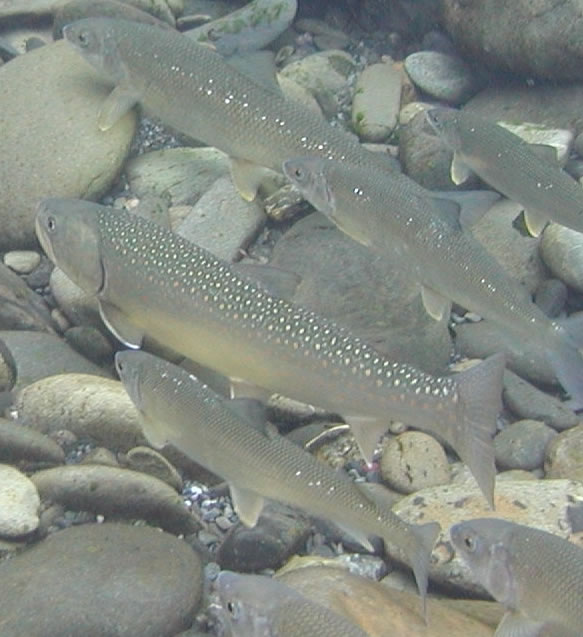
Bull Trout - Quinault River, WA